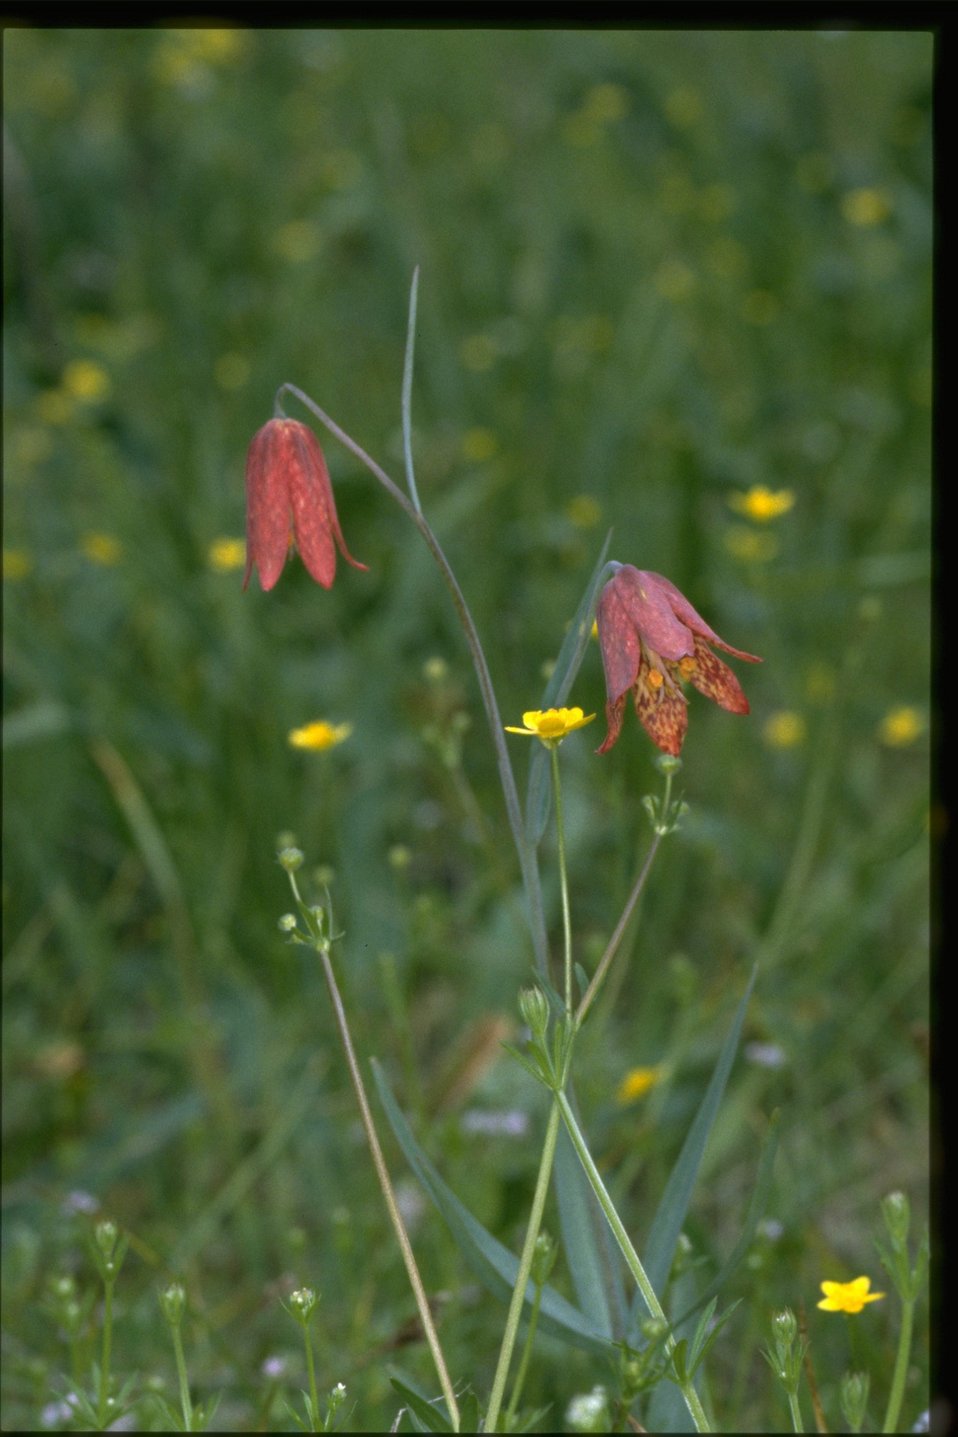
Medium shot of Gentner's Fritillary, Fritillaria gentneri.